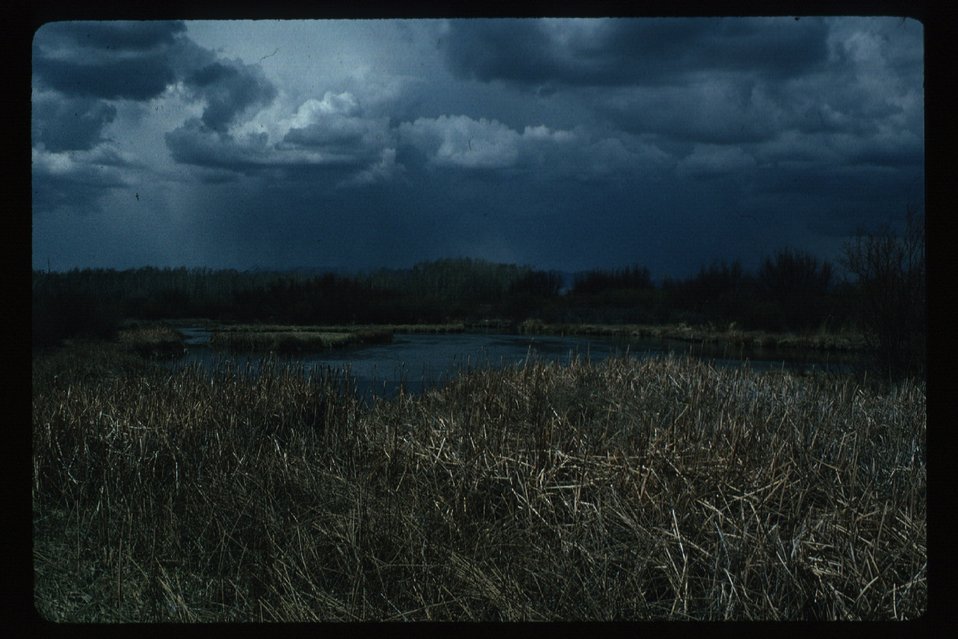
Silver Creek Trout Stream Riparian Shoshone Field Office